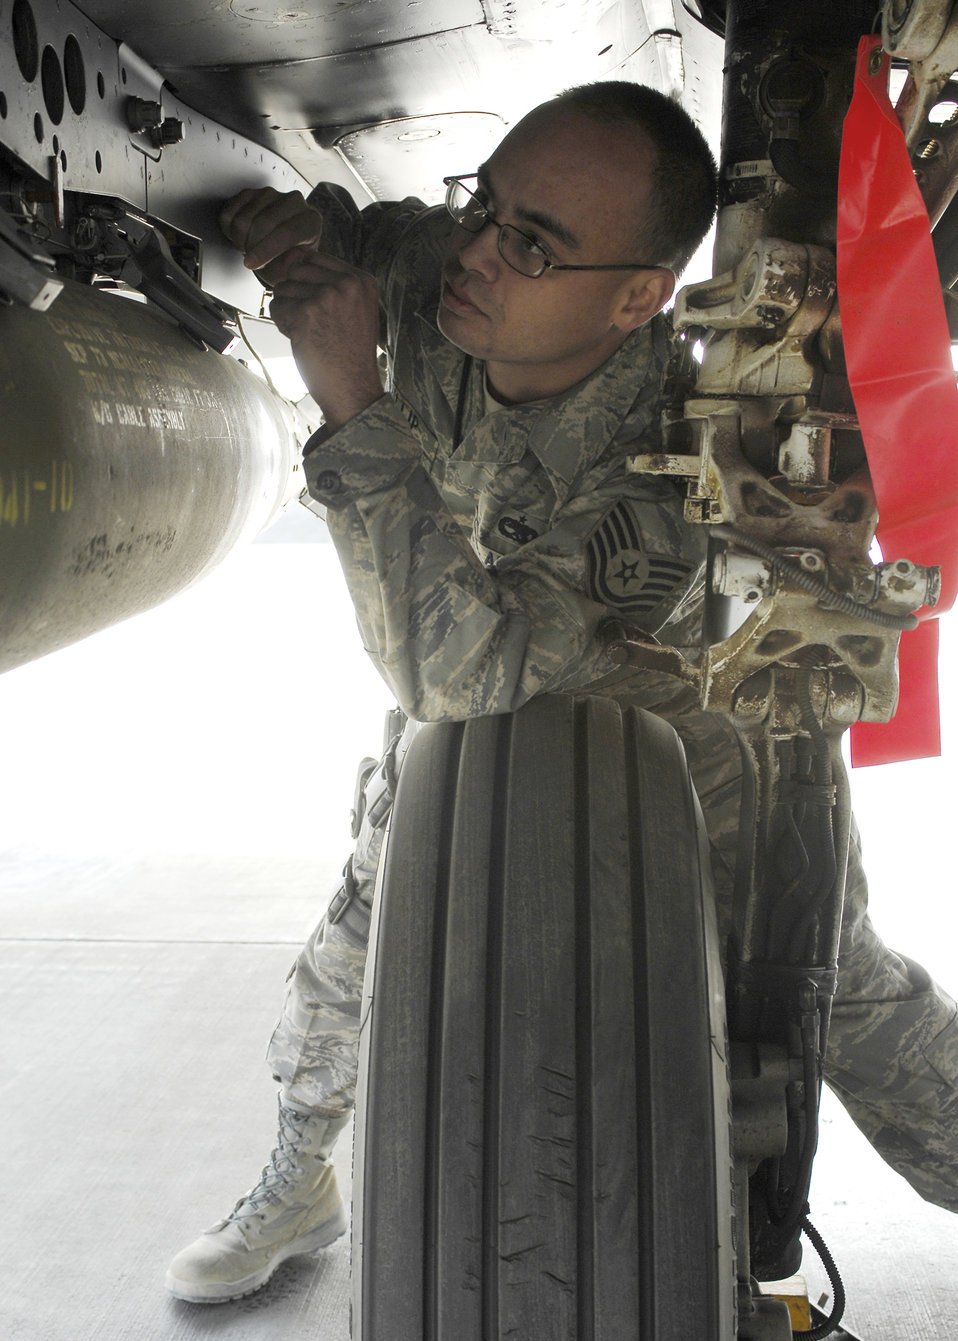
Getting it right

Tech. Sgt. Jason James Phillip checks a weapons load on the flightline Oct. 14, 2009, at Bagram Airfield, Afghanistan. He is an F-15E Strike Eagle weapons quality assurance inspector from the 455th Expeditionary Maintenance Group and is deployed from Seymour Johnson Air Force Base, N.C.